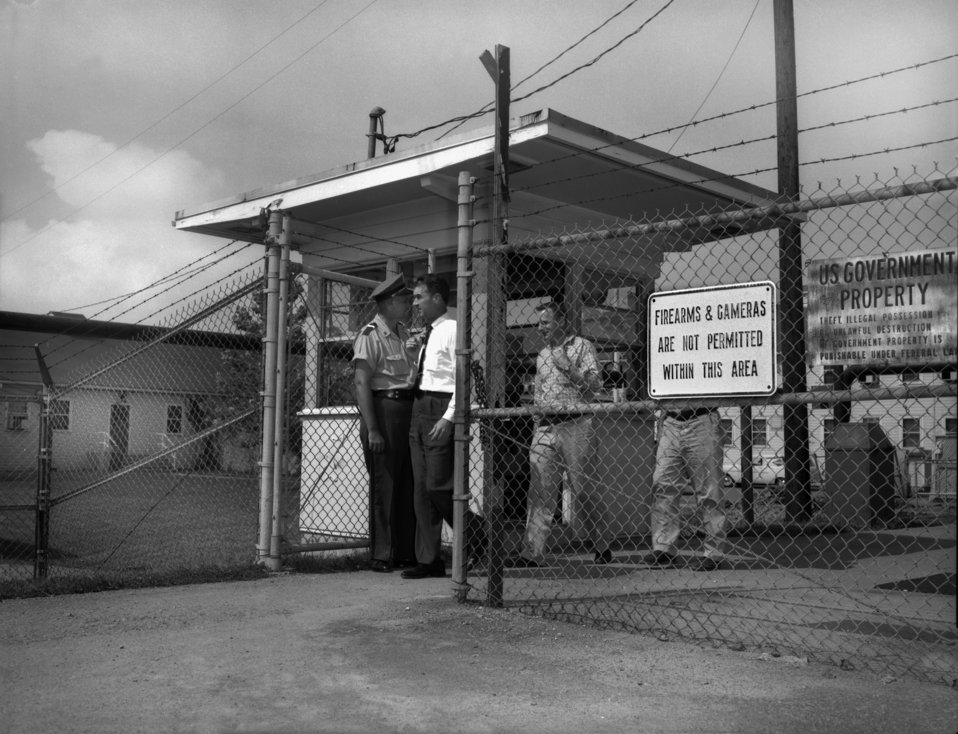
AEC Guard Gate Oak Ridge

60-0740 DOE photo by Ed Westcott

AEC Guard, gate and sign AEC Ad. Bldg. Oak Tennessee 8/5/1960